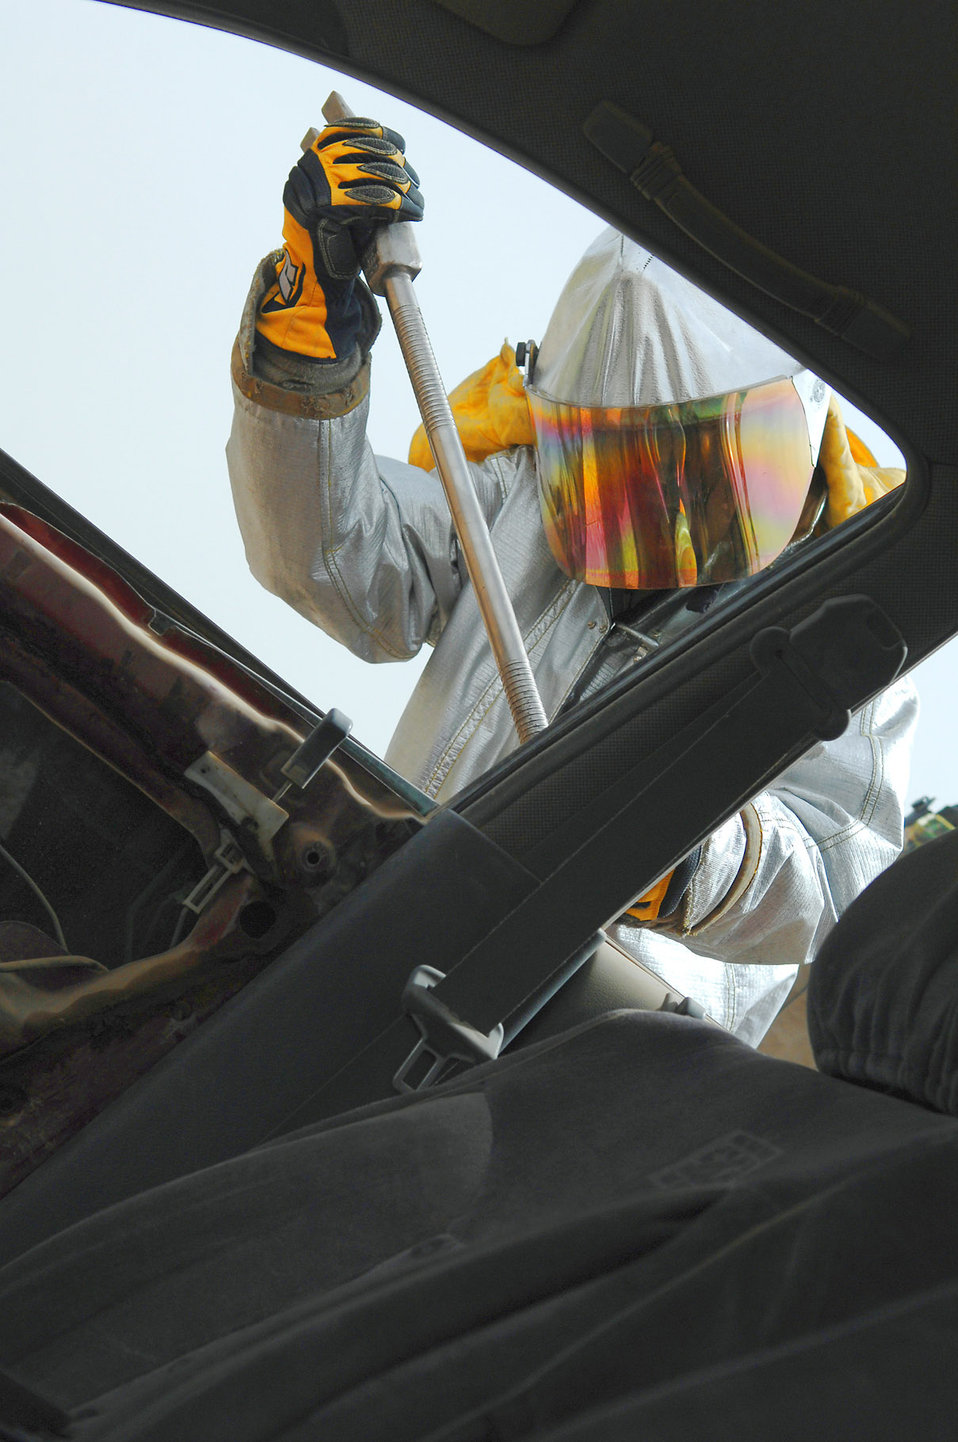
Bustin' in

Army Pfc. Doug Desbrough pries open the door of a vehicle during vehicle extrication training April 5 at Balad Air Base, Iraq. Army and 332nd Air Expeditionary Wing Air Force firefighters work jointly at the fire station here, which is conducive to quick reaction times and requires less coordination during emergency situations. Private Desbrough is a 8th Ordnance Company firefighter trainee deployed from Fort Bragg, N.C.